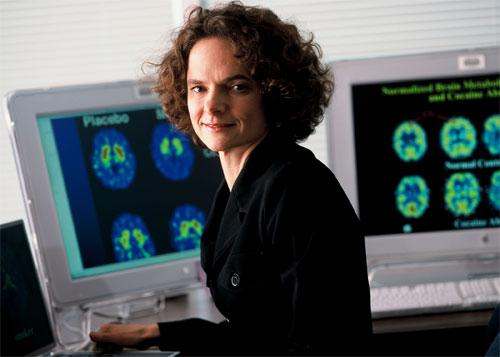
Dr. Nora Volkow